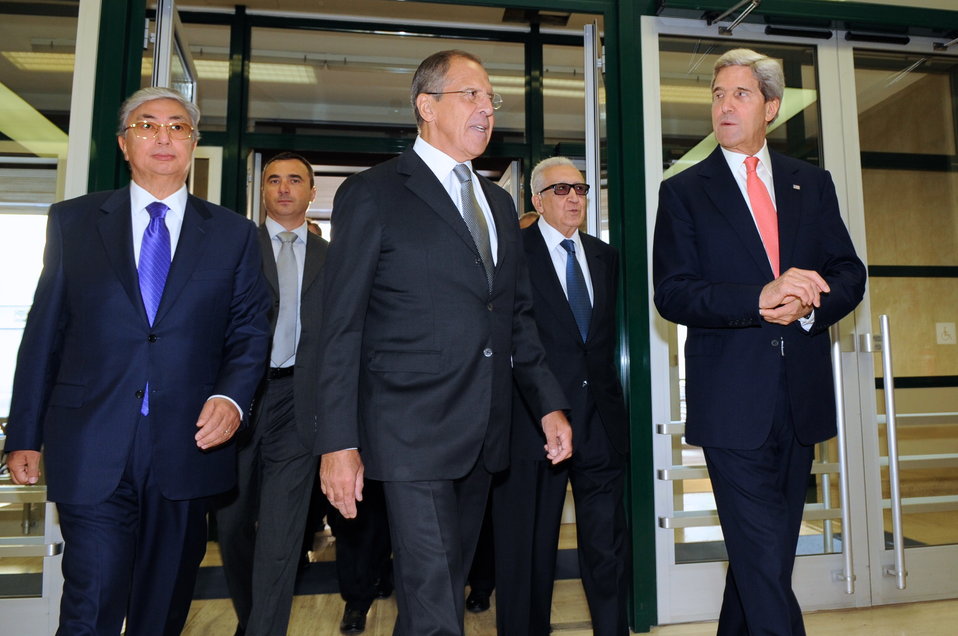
Secretary Kerry, Russian Foreign Minister Lavrov Meet with UN Special Envoy Brahimi

9:35 a.m., September 13, 2012 - U.S. Secretary of State John Kerry and Russian Foreign Minister Sergey Lavrov, accompanied by Director-General of the United Nations Office at Geneva Kassym-Jomart Tokayev and UN Special Envoy for Syria Lakhdar Brahimi, arrive at UN headquarters for a trilateral meeting focused on reaching a political solution to the Syrian civil war.